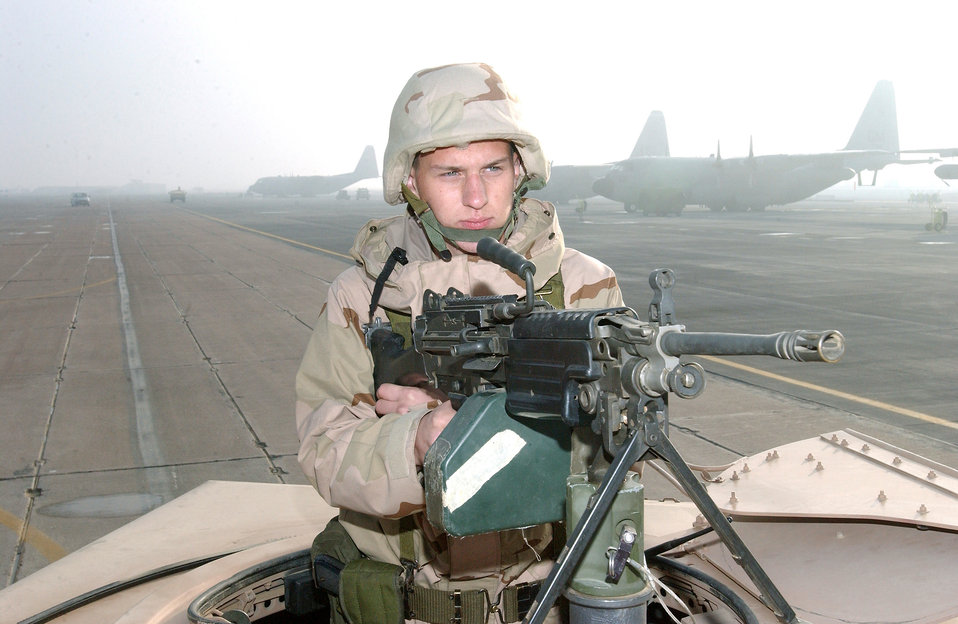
The fog of war

KARSHI-KHANABAD AIR BASE, Uzbekistan -- Airman 1st Class Cody Braemer mans an M-249 squad automatic weapon while guarding the flightline here during mid-morning fog. Despite heavy fog, dust storms and extreme temperature changes during fall, base security forces remain vigilant. Airman Braemer is a security forces Airman with the 416 Air Expeditionary Group.